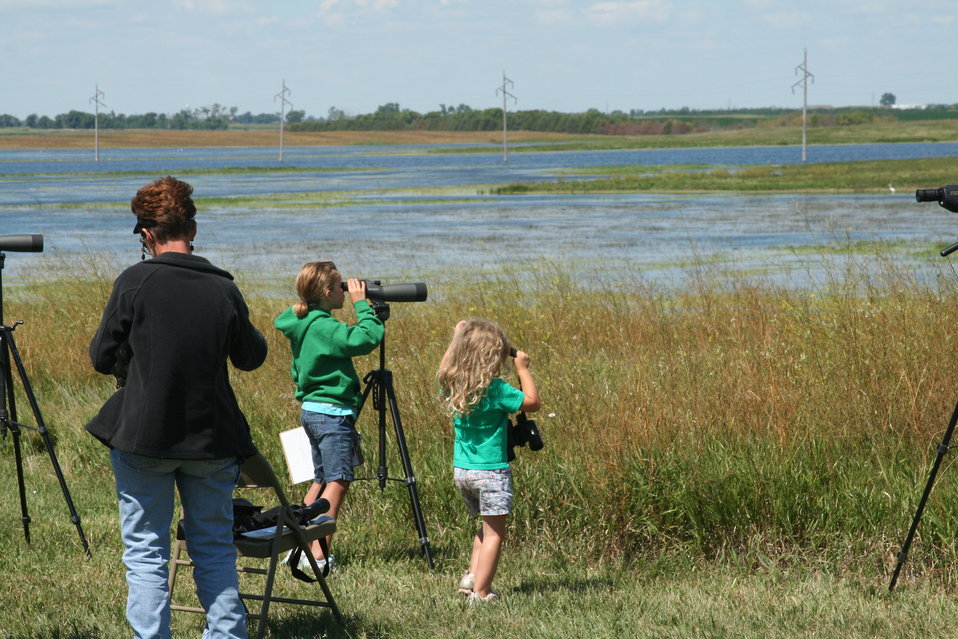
2011 Huron Prairie Fest

Participants learn how to use spotting scopes to look at our wetland landscapes. There was a lot of different waterfowl for them to see that day.